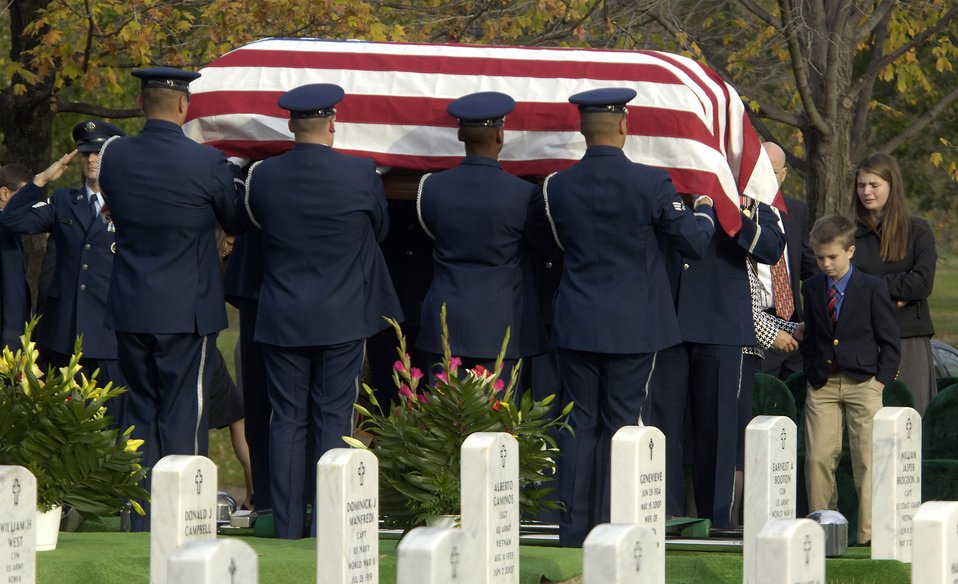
Honor guard transitions to new funeral guidelines

Members of the Air Force Honor Guard conduct a military honors funeral ceremony Nov. 1 for retired Lt. Gen. Marvin McNickle at Arlington National Cemetery, Washington, D.C. Honor guards across the Air Force will change the way they perform retiree funerals due to manpower cuts beginning Nov.1.